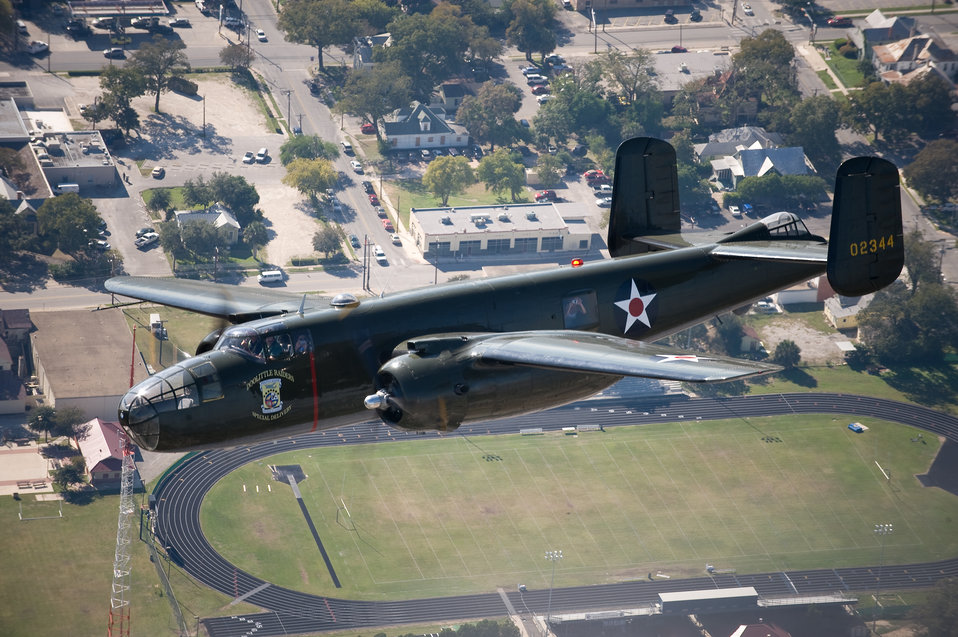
Warrior Flight